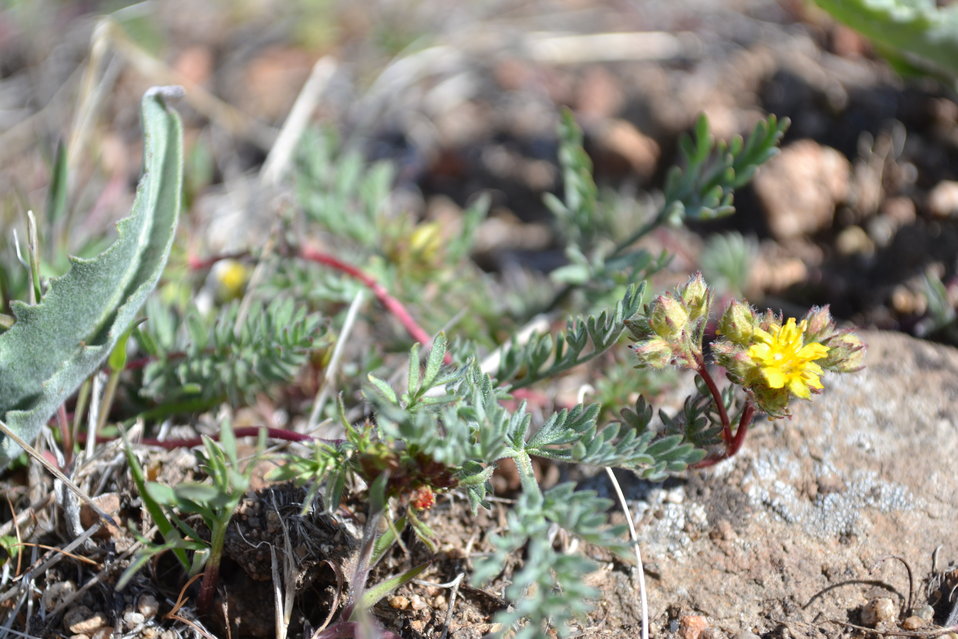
Webber's ivesia populations are being threatened by habitat loss and degradation.